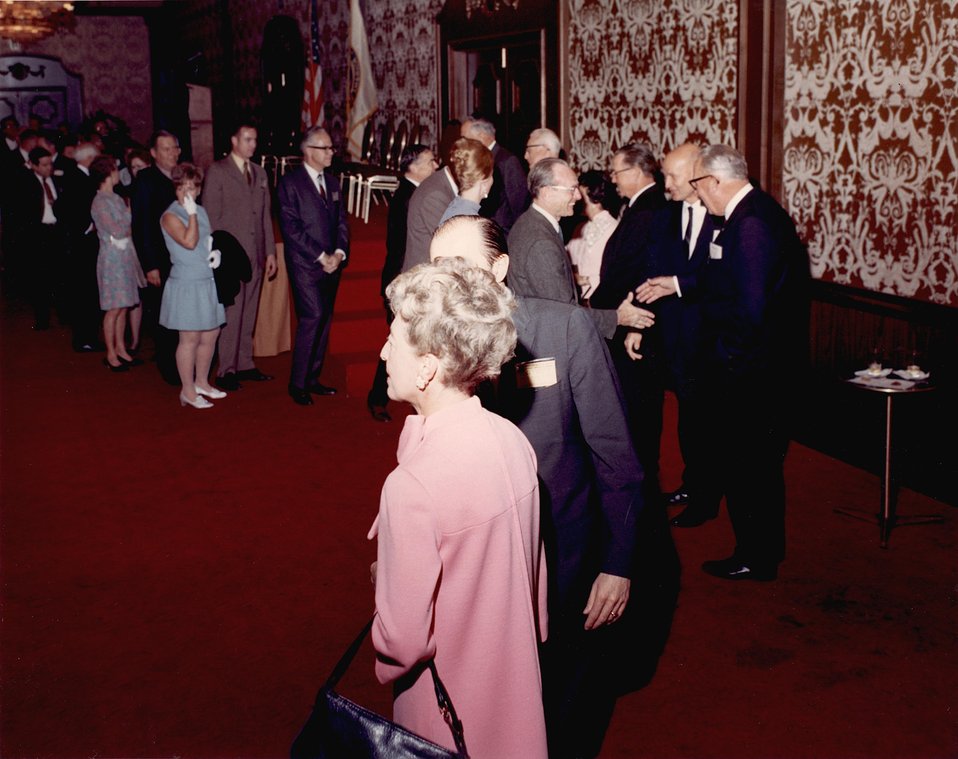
Enrico Fermi Award Ceremony. Imperial Ballroom. San Fransisco Hilton Hotel. 5:30 p.m., December 2, 1969. Fermi Award. Recipient: Walter Zinn. Date: Dec. 2, 1970.